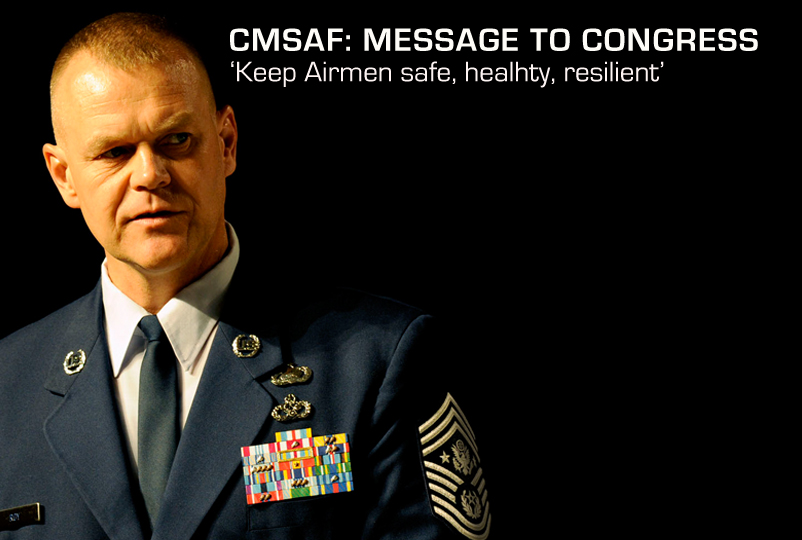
CMSAF: Message to Congress